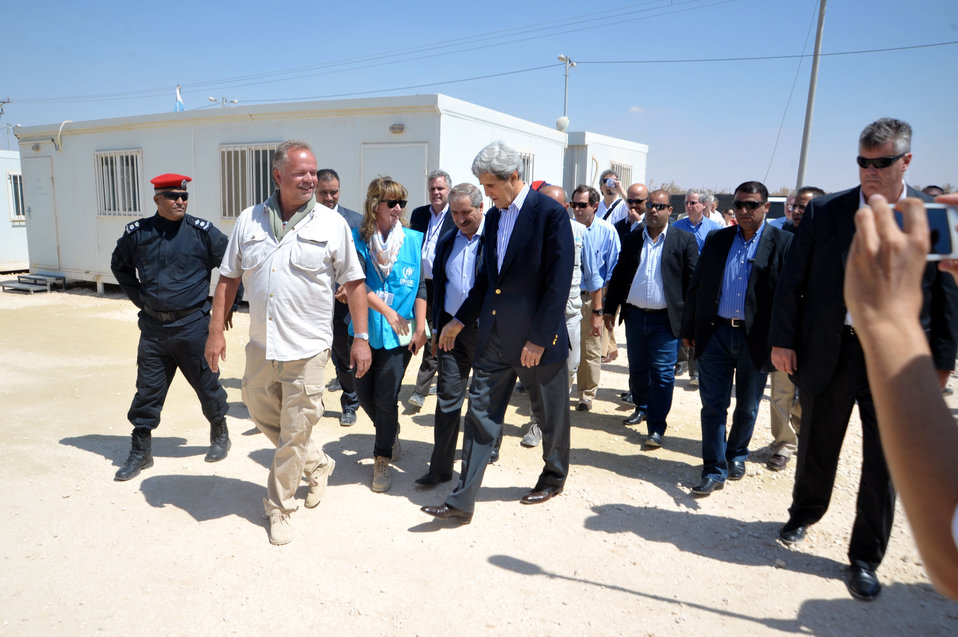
Secretary Kerry Visits the Za'atri Refugee Camp

U.S. Secretary of State John Kerry, accompanied by Camp Director Kilian Kleinschmidt of the Office of the United Nations High Commissioner for Refugees, visits the Za'atri camp for Syrian refugees on July 18, 2013.